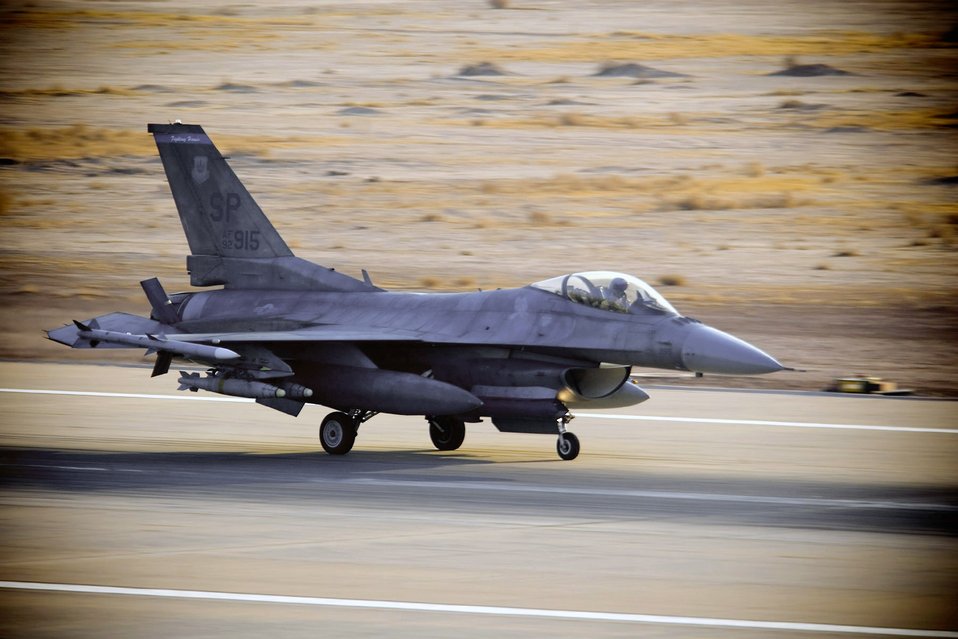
Jan. 6 airpower summary: F-16 supports Iraqi missions

An F-16 Fighting Falcon from the 22nd Expeditionary Fighter Squadron lands at Balad Air Base, Iraq. Members of the 22nd EFS, deployed from Spangdahlem AB, Germany, fly missions daily in support of Operation Iraqi Freedom.